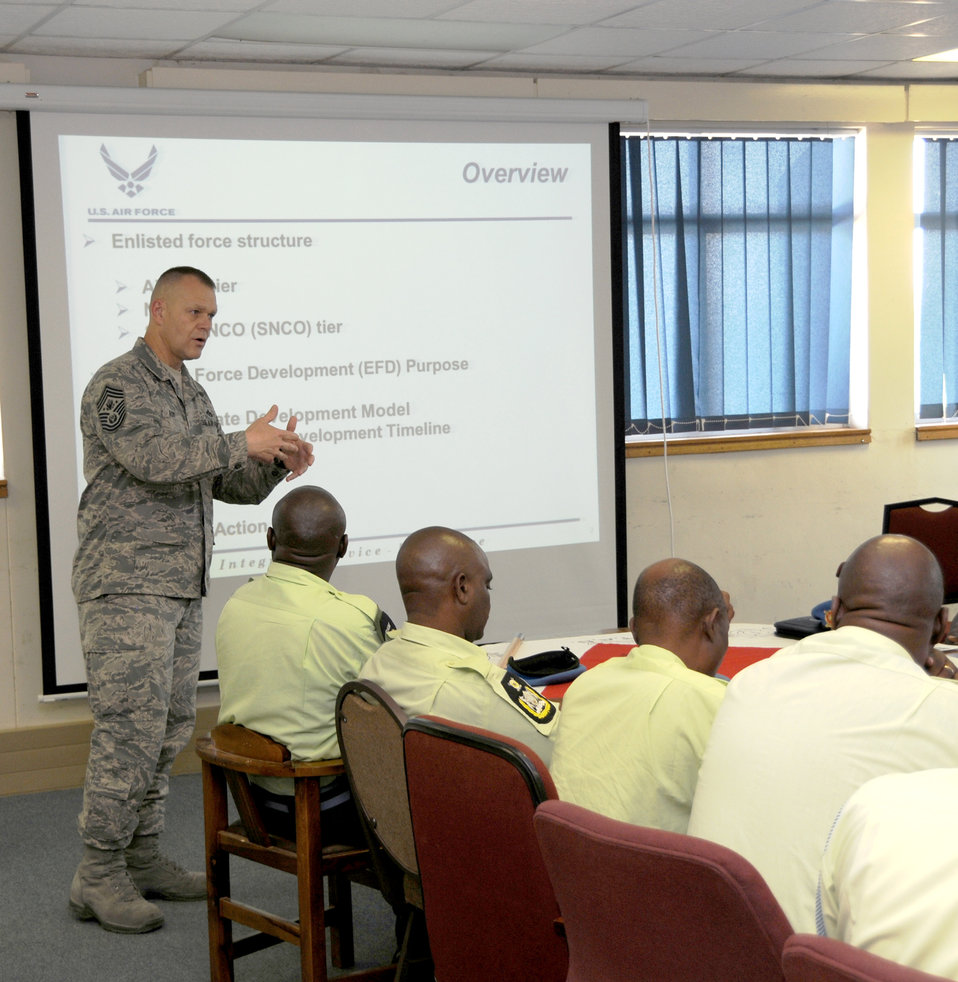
CMSAF visits Botswana

Chief Master Sgt. of the Air Force James A. Roy addresses senior enlisted leaders from across the Botswana Defense Force Oct. 11, 2010, during a visit to Thebaphatshwa Air Base, Botswana. Chief Roy and a team from 17th Air Force spent the day discussing enlisted force development with members of the BDF.